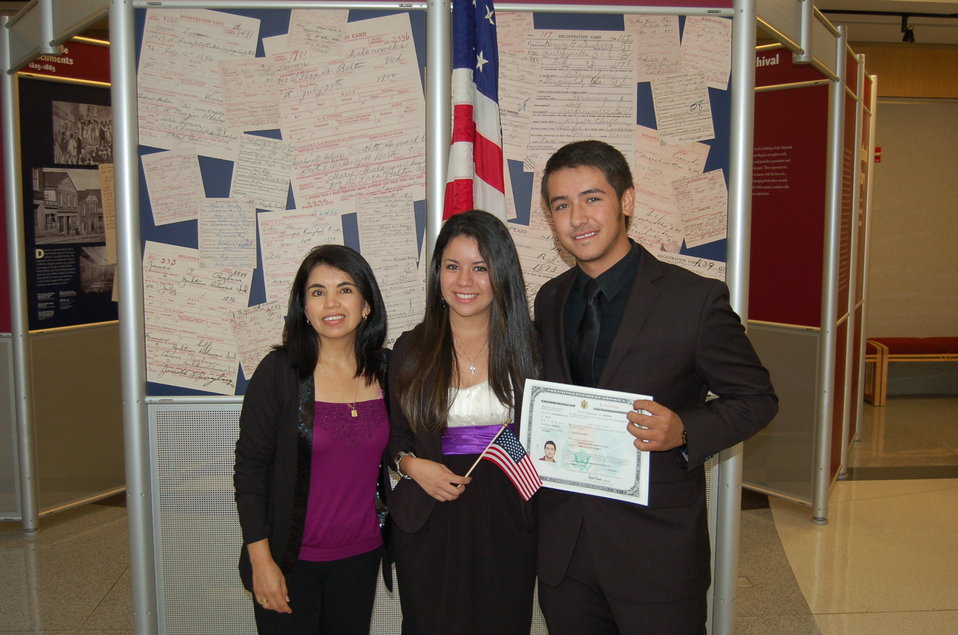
New Citizens